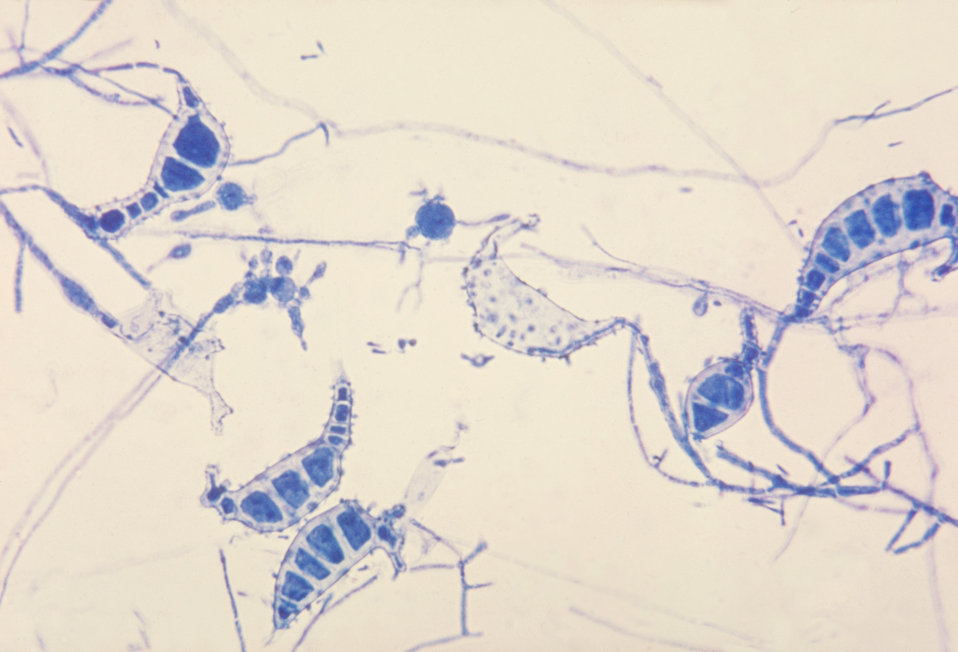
This is a photomicrograph of macroconidia, or large leaf or club-shaped asexual spores of the fungus M. distortum.